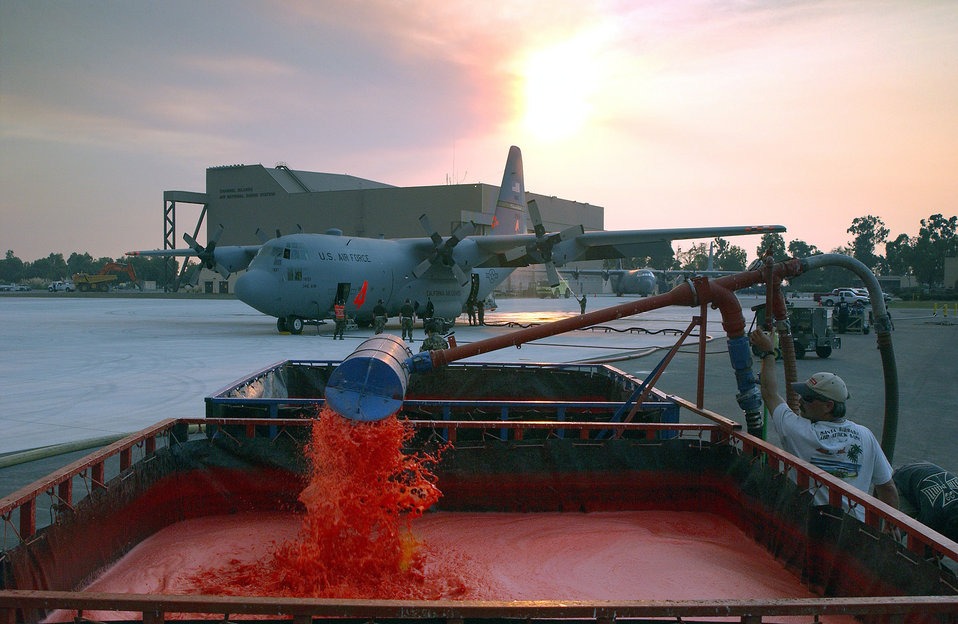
California Fires

CHANNEL ISLANDS AIR NATIONAL GUARD STATION, Calif. -- - A Modular Airborne Fire Fighting System equipped C-130E Hercules from the 146th Airlift Wing here is reloaded with Phoschek fire retardant to be dropped on the Simi Fire in Southern California on Oct. 28. Pilots flying eight Air Force C-130 Hercules cargo airplanes have dropped 129,600 gallons of retardant on the Simi fire during 48 sorties and 32 flying hours as of Oct. 29.